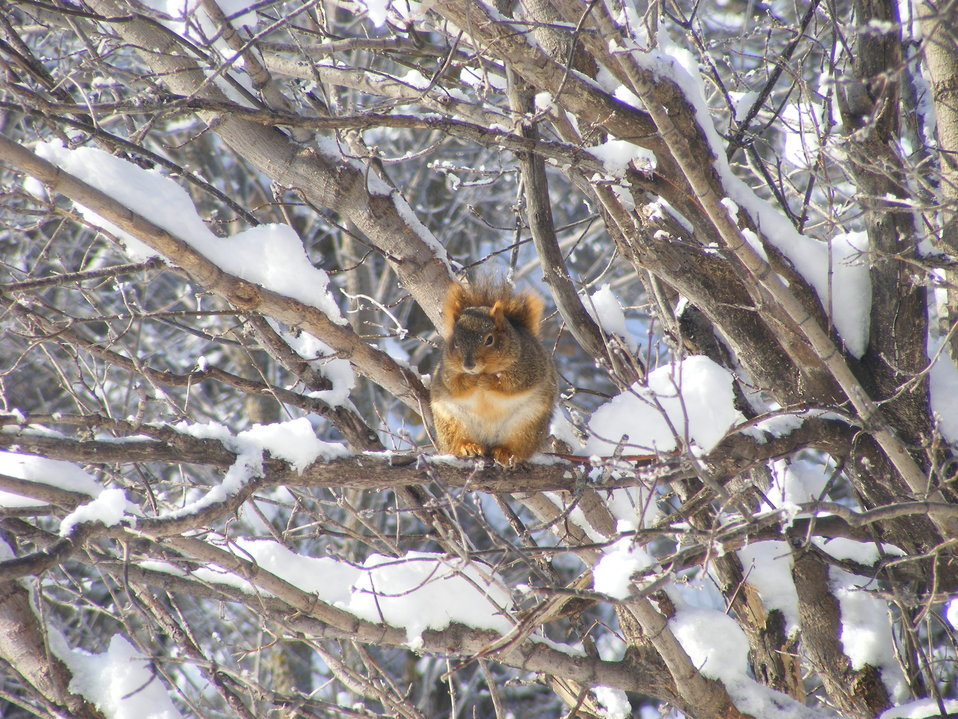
Cute and Hungry

A rusty red fox squirrel rests in a snow-covered tree near the Visitor Center at Waubay NWR. Squirrels are common in the winter as they scrounge for sunflower seeds below the bird feeder. A special bird feeder was purchased to keep these resourceful mammals from eating too much seed.